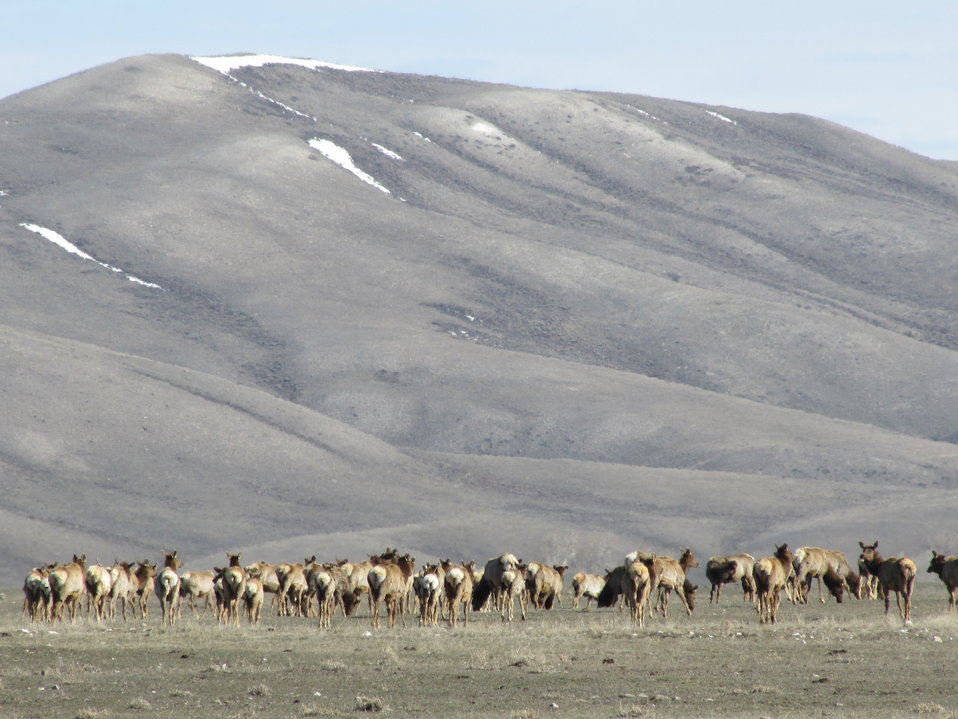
Still Lingering

Elk may remain on the National Elk Refuge even after the snow has melted, foraging on grasses from the previous growing season until 'greenup' of new spring growth occurs throughout the valley.